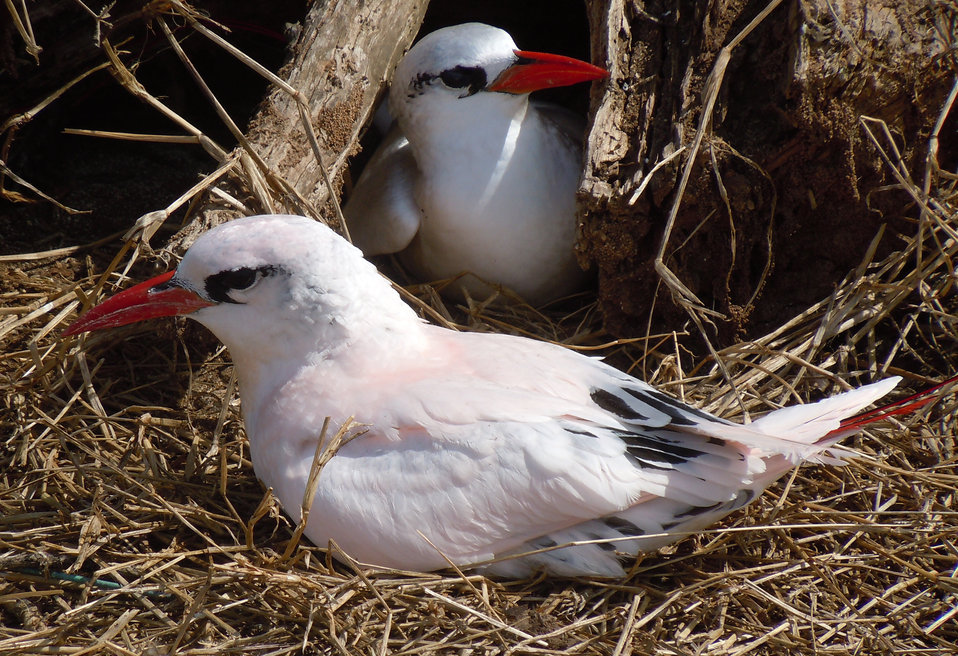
red-tailed tropicbirds

These rare seabirds' tails are bright red, rapier-thin and longer than their bodies.
Midway Atoll National Wildlife Refuge
March 2012